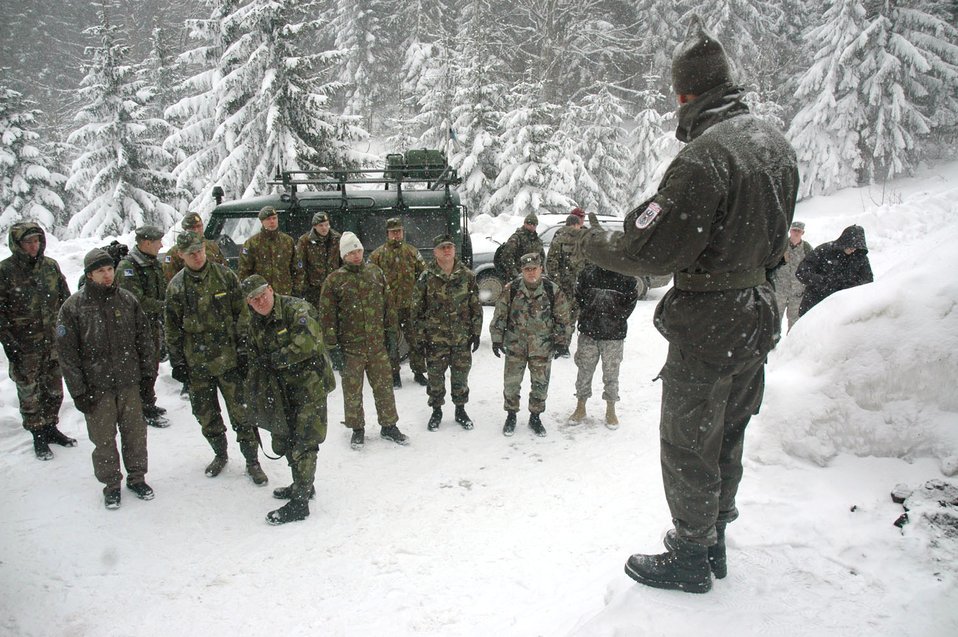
Let the games begin

TUZLA AIR BASE, Bosnia and Herzegovina (AFPN) -- Operation Winter games participants receive a pregame briefing from the Austrian contingency that hosted the games here. The three-man Air Force team competed against 12 other teams from 14 nations.